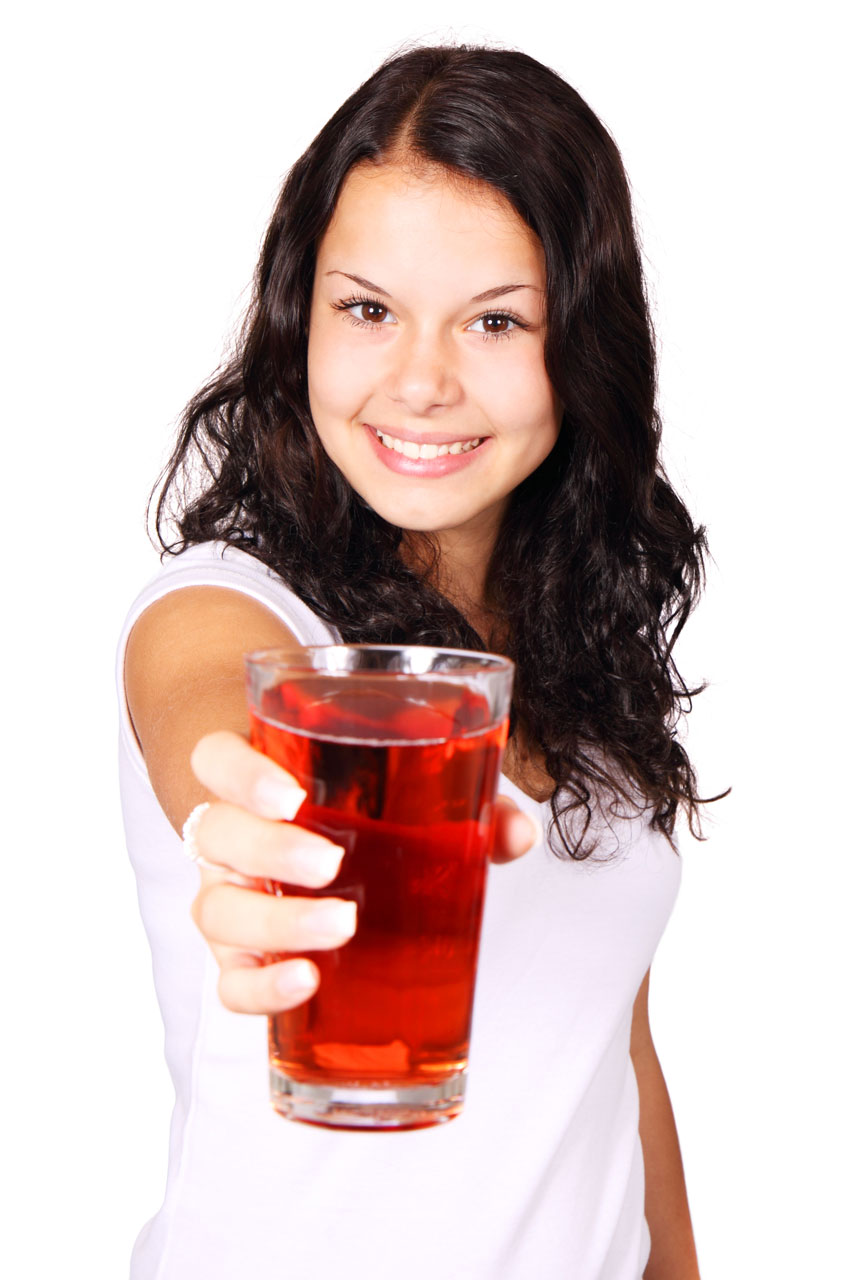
Young woman with drink

Young woman with cranberry juice isolated on white background.